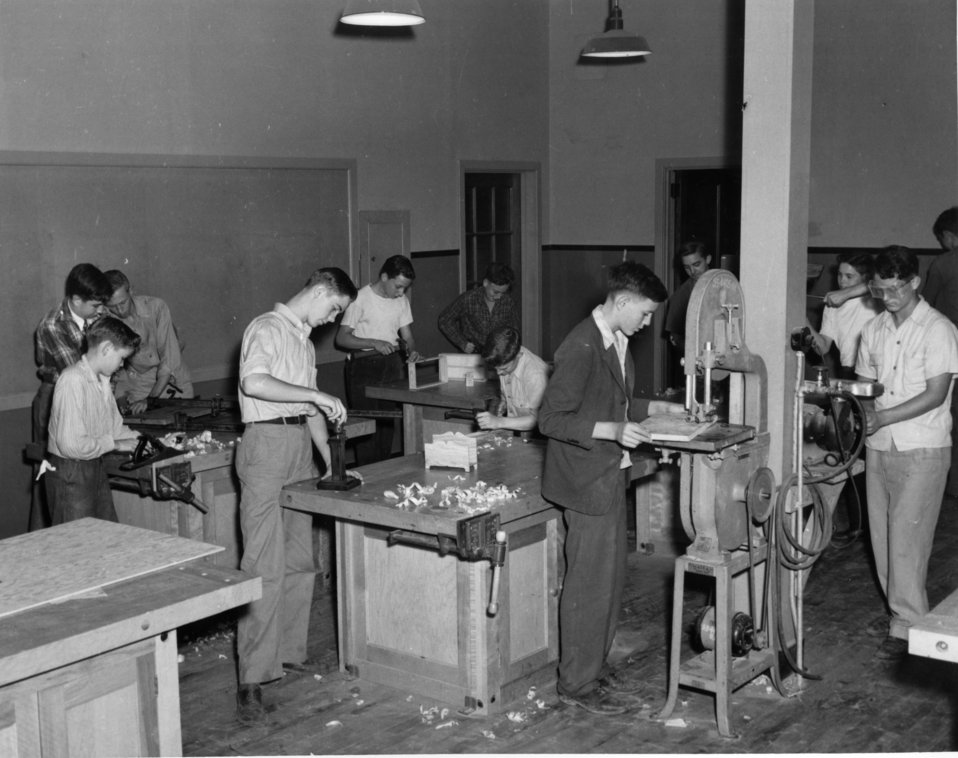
Schools at Oak Ridge